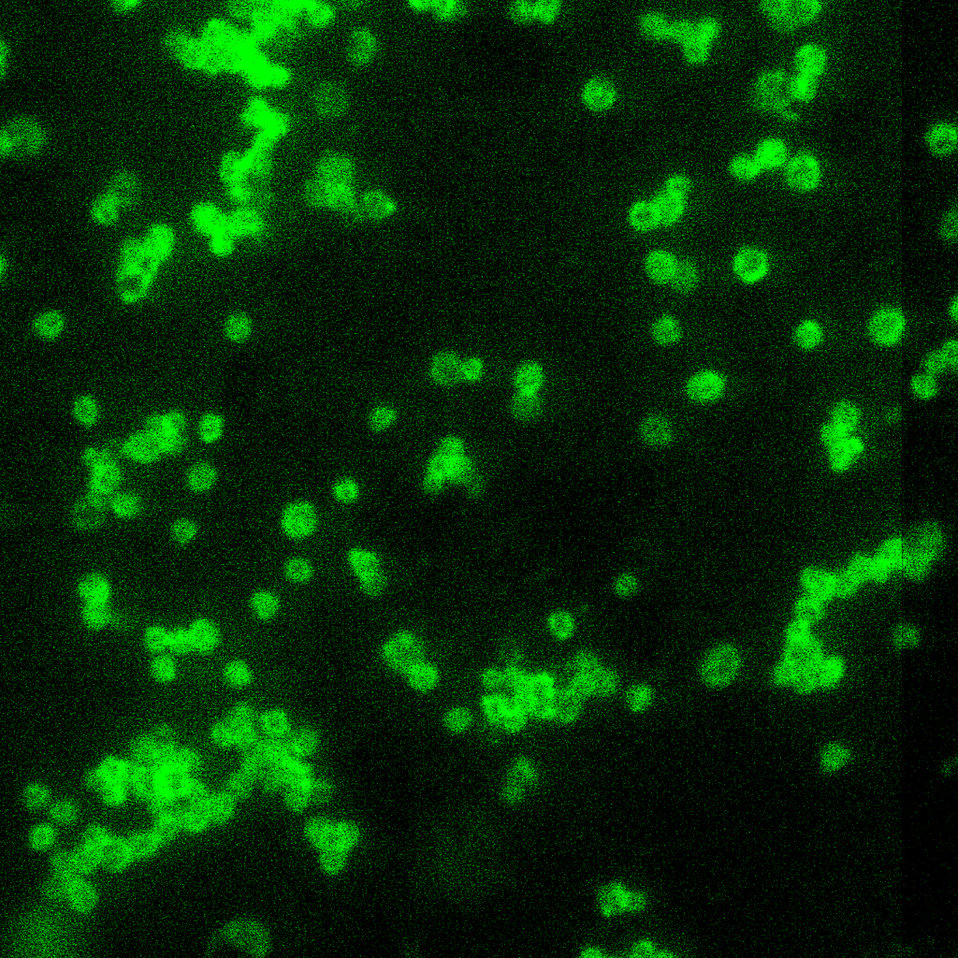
Francisella tularensis as seen with Direct Fluorescent Antibody Stain (DFA).